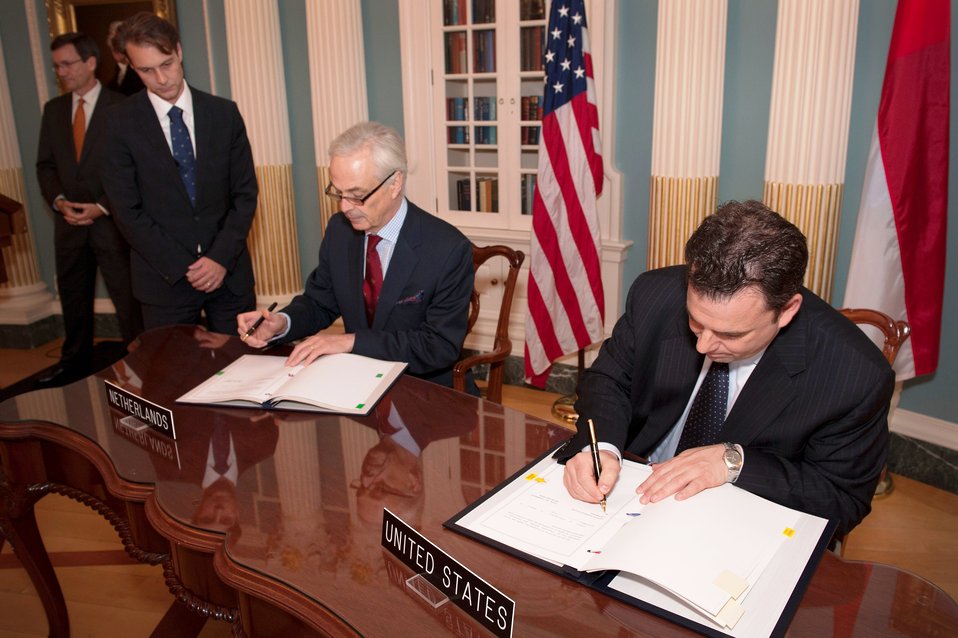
Assistant Secretary Shapiro and Ambassador Bekink Sign a New U.S.-Kingdom of the Netherlands Status of Forces Agreement

Assistant Secretary of State for Political-Military Affairs Andrew J. Shapiro and Kingdom of the Netherlands Ambassador Rudolf Bekink sign a new U.S.-Kingdom of the Netherlands Status of Forces Agreement covering the Kingdom’s territories in the Caribbean at the U.S. Department of State, October 19, 2012.